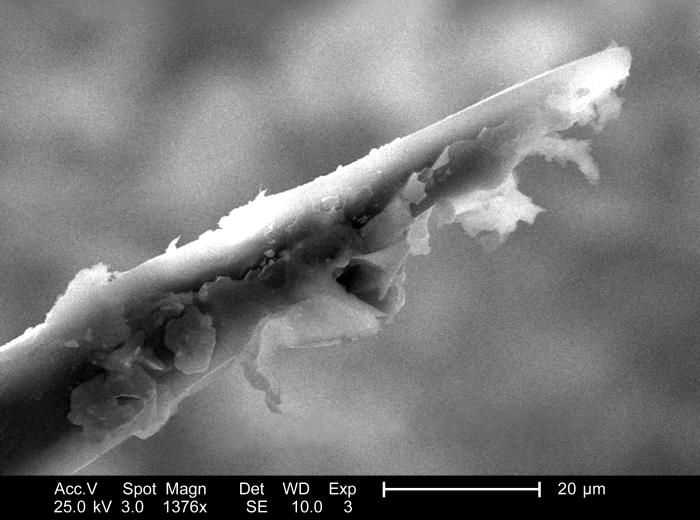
From a lateral perspective, and under a high magnification of 1376x, this scanning electron micrograph (SEM) depicted some of the ultrastructural morphologic details seen at the distal tip of the stinger apparatus of an unidentified hymenopteran insect found deceased in the Decatur, Georgia suburbs. The Order of Hymenoptera includes bees, wasps, ants, and sawflies. Judging from the smooth nature of this stinger shaft, this was probably something other than a honeybee, whose stinger shaft would have displayed more defined, broader barbs at the distal tip. The smoother nature of the shaft, would have allowed the stinger to have been easily extracted without it becoming inextricably embedded when it was penetrating a victim's skin, as is the case with the Western honeybee, Apis mellifera. Note that the shaft is covered with amorphous material, primarily composed of chitinous exoskeletal flakes sloughed off of the stinger itself.